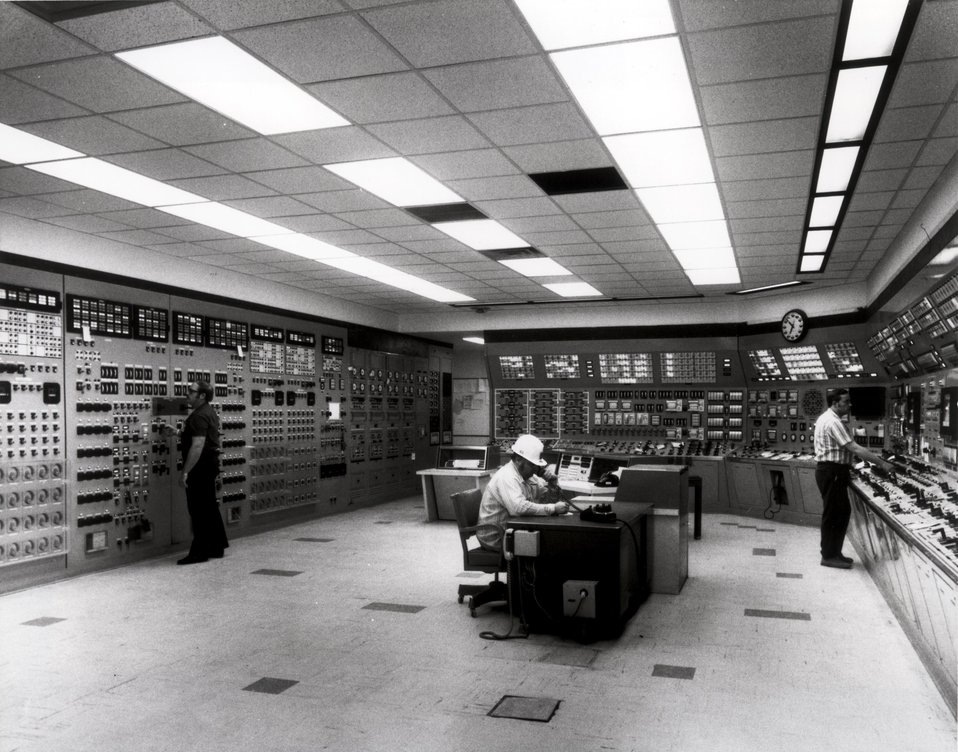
Operations of the Fort Calhoun Station, Unit 1, are controlled and monitored from this room. Circa 1974.